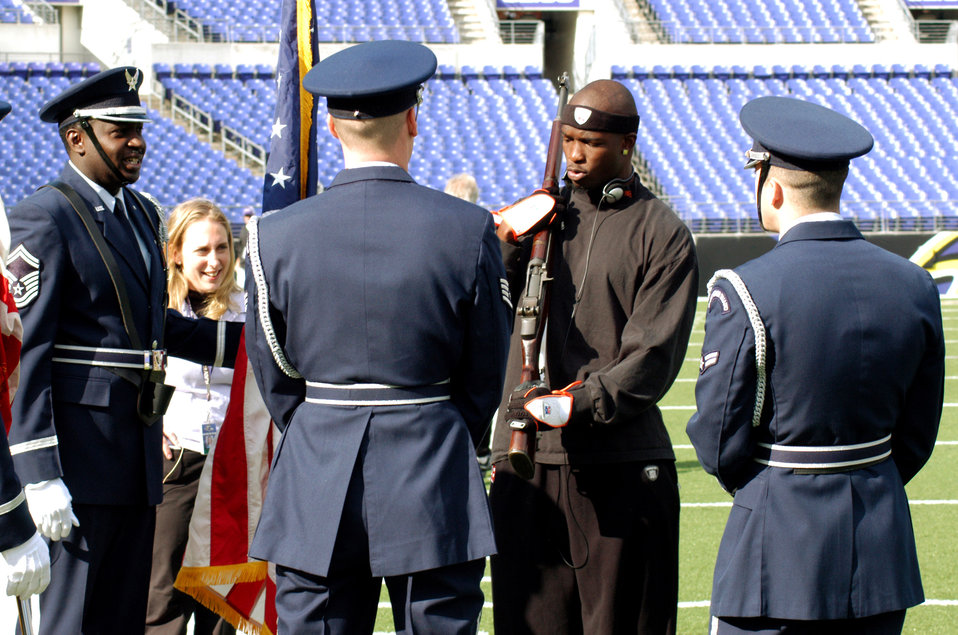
Airmen, Bengals and Ravens ... oh my!

Chad Johnson, Cincinnati Bengals wide receiver, gets in a pre-game workout with the 70th Intelligence Wing Honor Guard before playing in the NFL football game against the Baltimore Ravens Nov. 5. Four Airmen from 70th Intelligence Wing at Fort Meade, Md., presented the colors as part of the pre-game show in front of a crowd of nearly 71,000 fans. The honor guard memvers were Senior Master Sgt. Mitchell Ross, Tech. Sgt. Aaron Arneson, Staff Sgt. Justin Mealy and Airman First Class Ian Kilbourn.